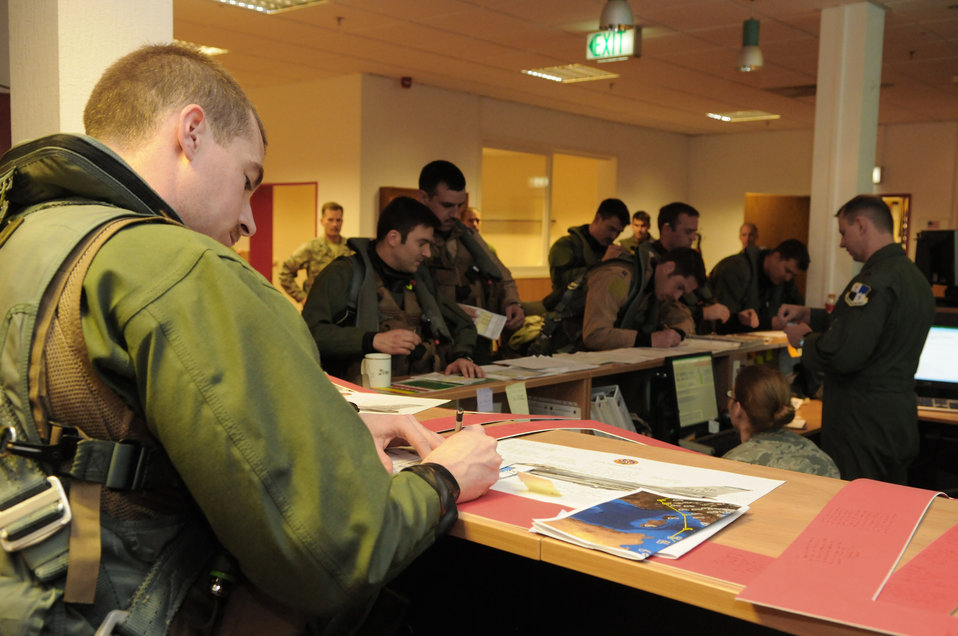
Operation Odyssey Dawn

SPANGDAHLEM AIR BASE, Germany ? Pilots from the 480th Fighter Squadron receive a briefing at the squadron here before leaving to support of Operation Odyssey Dawn March 19. Joint Task Force Odyssey Dawn is the U.S. Africa Command task force established to provide operational and tactical command and control of U.S. military forces supporting the international response to the unrest in Libya and enforcement of United Nations Security Council Resolution (UNSCR) 1973. UNSCR 1973 authorizes all necessary measures to protect civilians in Libya under threat of attack by Qadhafi regime forces. JTF Odyssey Dawn is commanded by U.S. Navy Admiral Samuel J. Locklear, III.